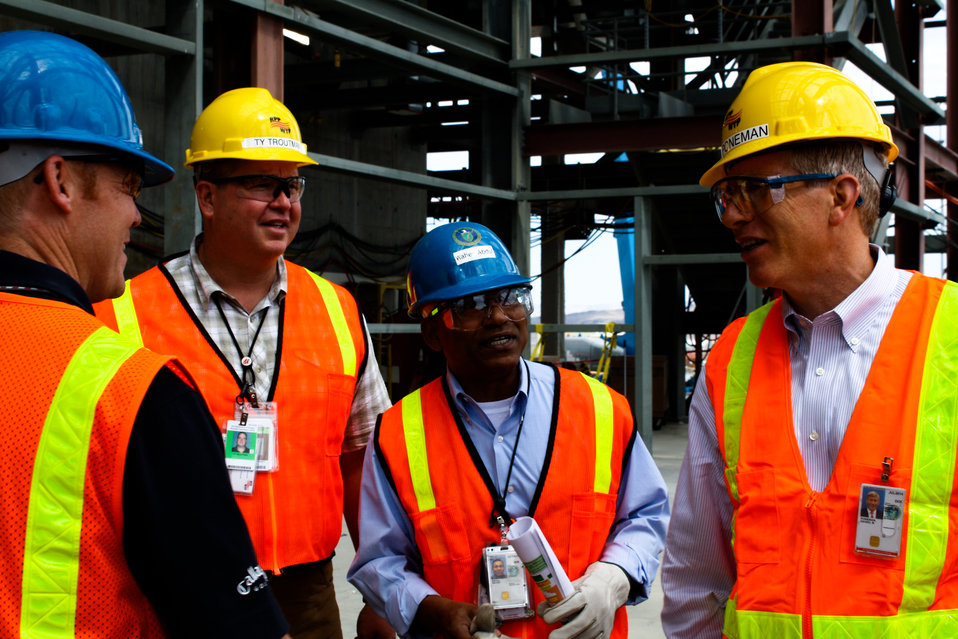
Poneman Vit Plant Visit 06-14-10-27